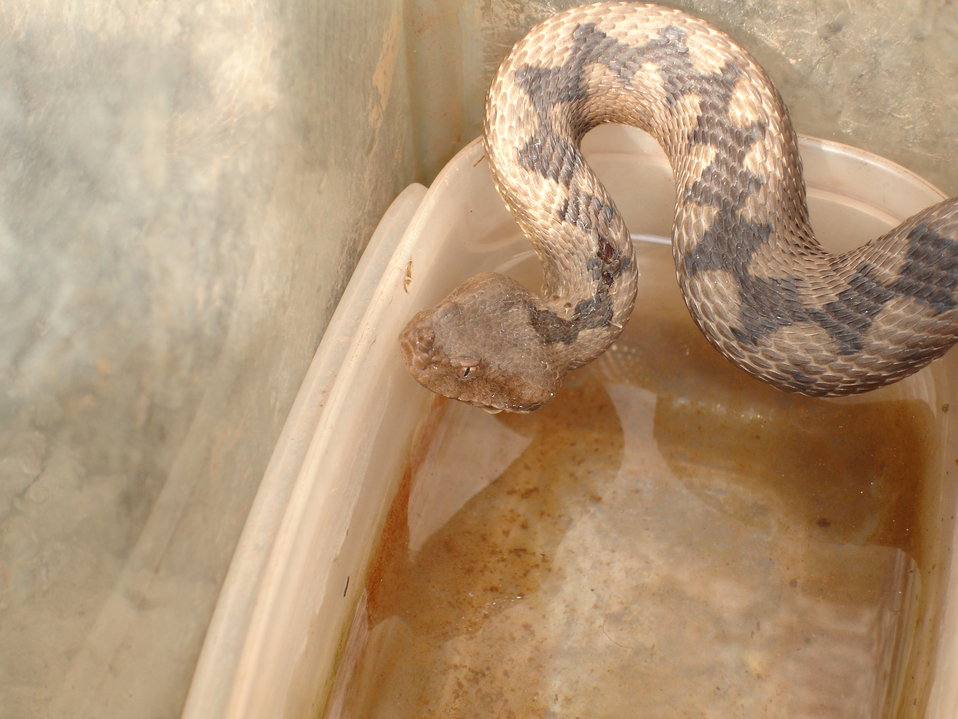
Filip Lazarevic Self made photo